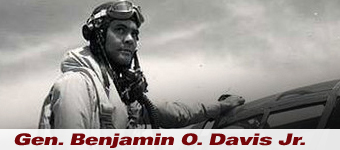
Gen. Benjamin O. Davis Jr.

Gen. Benjamin O. Davis history spotlight graphic